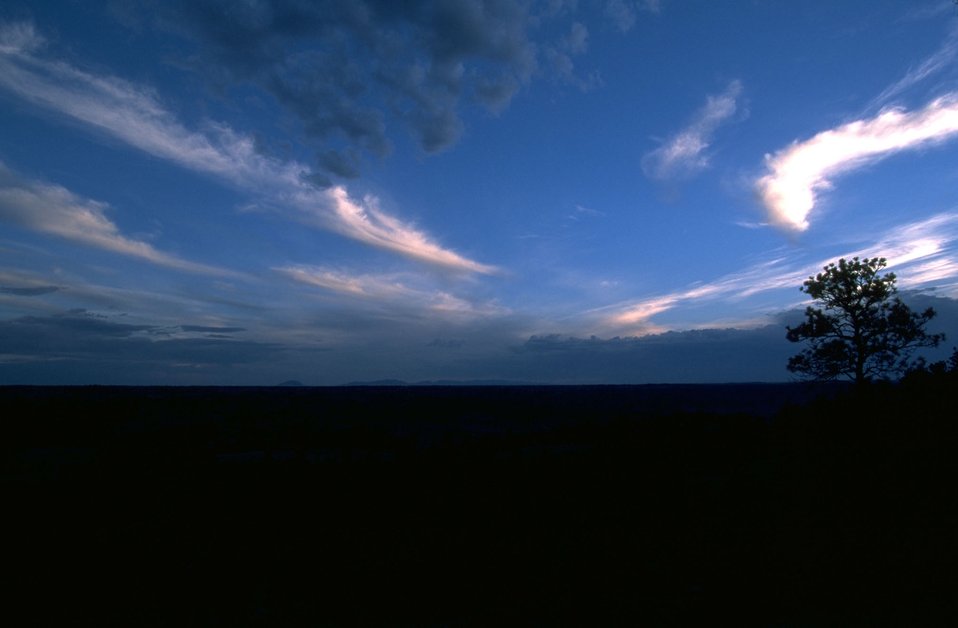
Clouds, sky over the Missouri Breaks